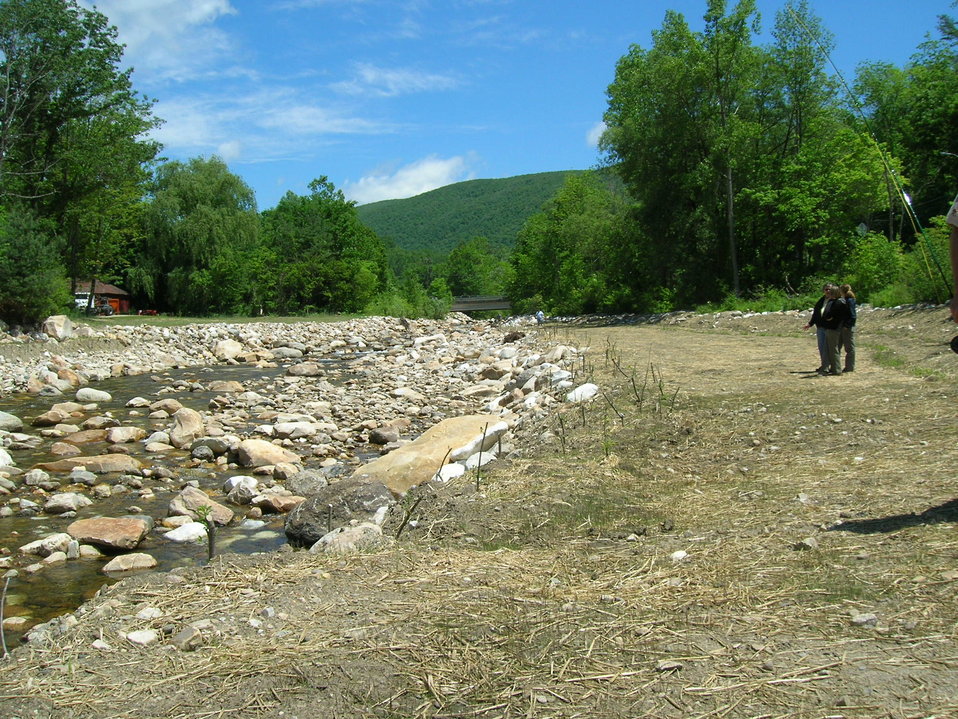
Briggsville Dam Removal Celebration